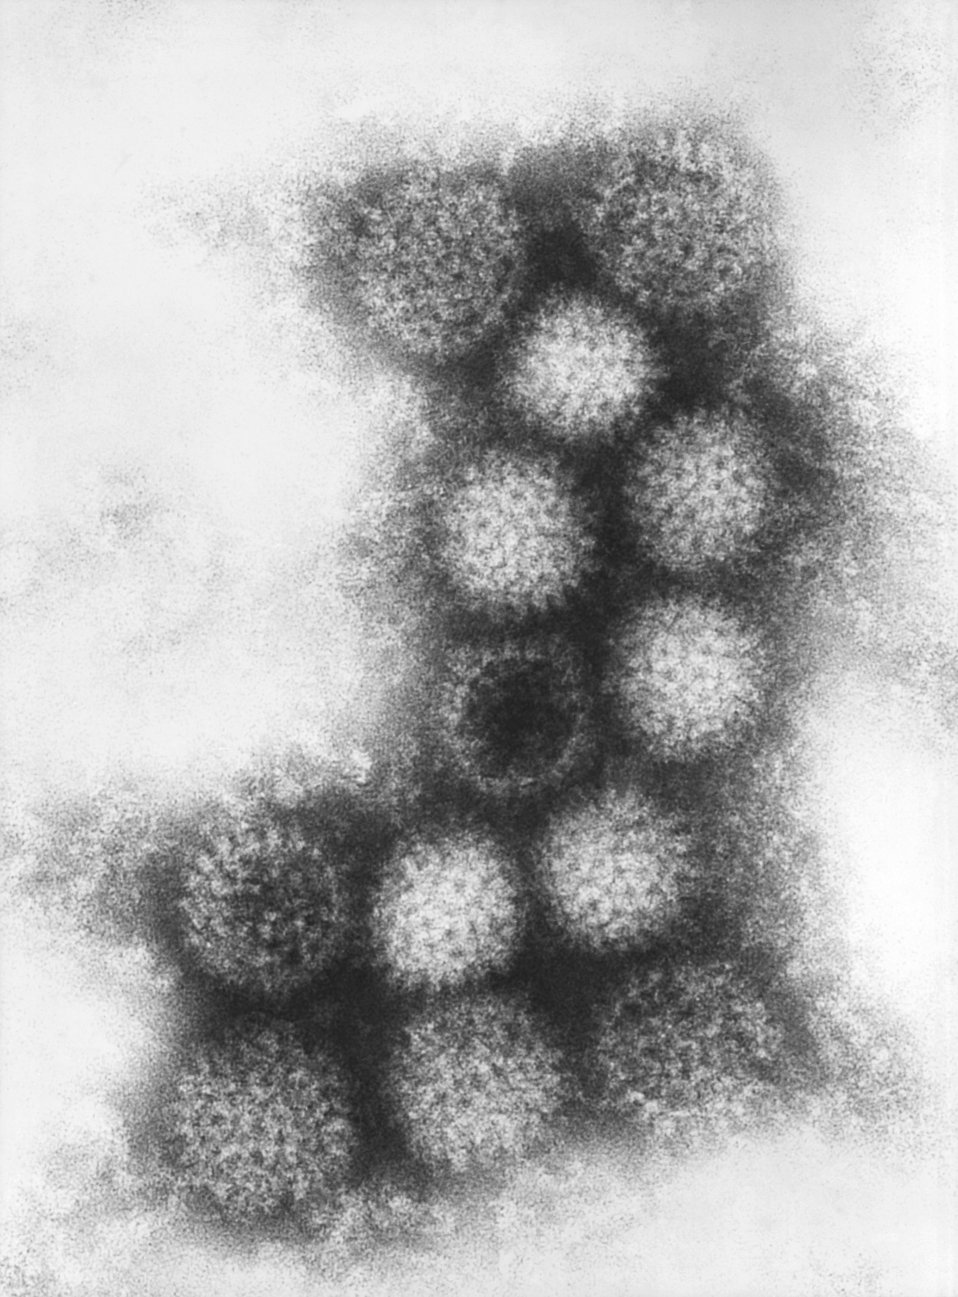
This transmission electron micrograph (TEM) revealed some of the morphologic details displayed by the Irituia strain of the Changuinola virus, a member of the genus Orbiviruses, which is one of nine genera of the virus family known as the Reoviridae. The Changuinola virus inhabits Panama and northern South America.